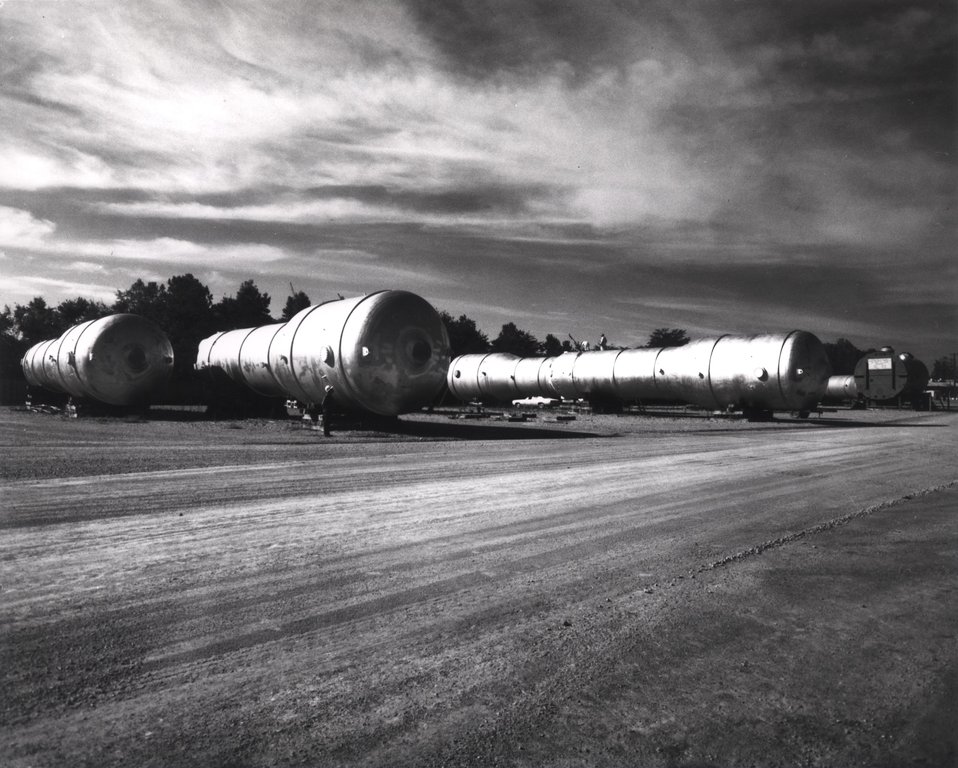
These huge cannon-like vessels are steam generators, four of which will be used in conjunction with each of the two nuclear reactor units at TVA's Sequoia Nuclear Plant on the Tennessee River northeast of Chattanooga. Circa 1974.